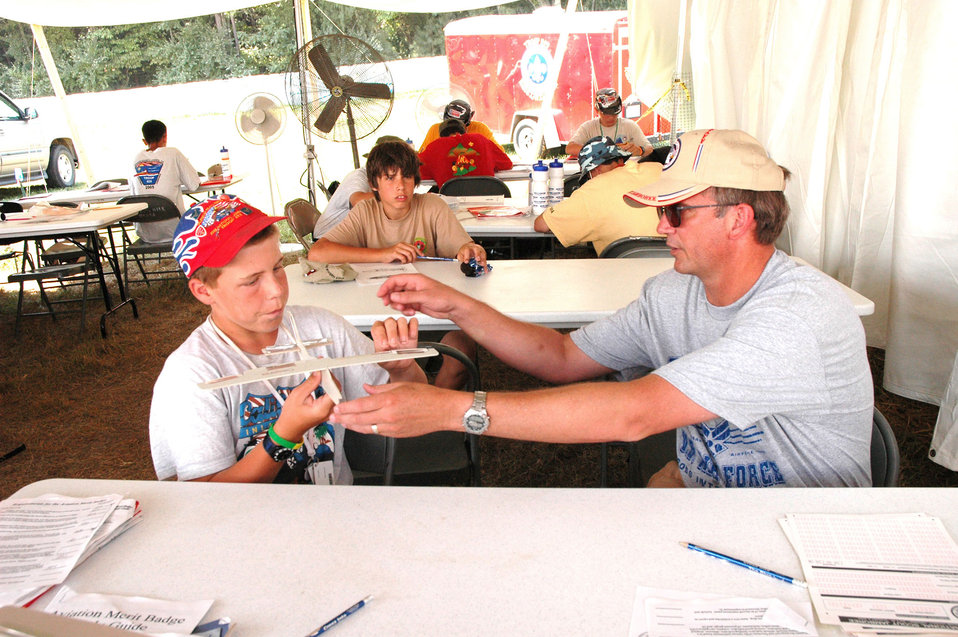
Better than aviation education is a really cool patch

FORT A.P. HILL, Va. -- Retired Lt. Col. Jeff Ball helps a Boy Scout earn an aviation merit badge at the 2005 National Scout Jamboree by teaching him the fundamentals of powered flight. Retired and active-duty Air Force pilots, civilian pilots, certified flight instructors and even a Navy pilot helped nearly 1,000 Boy Scouts earn their aviation merit badge during the 10-day Jamboree.